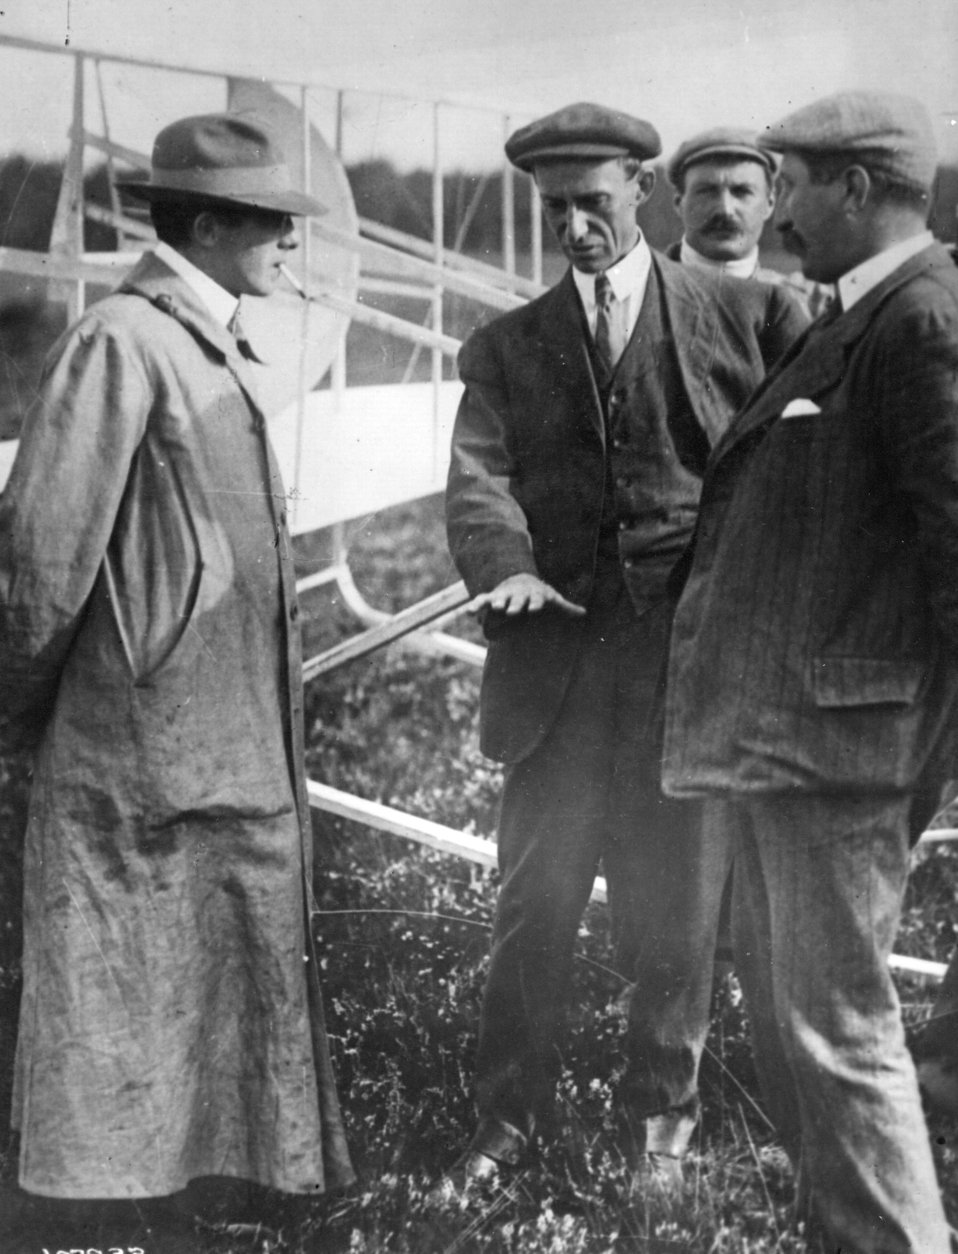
Wilbur Wright

Early Years -- Wilbur Wright explaining something about his flight.